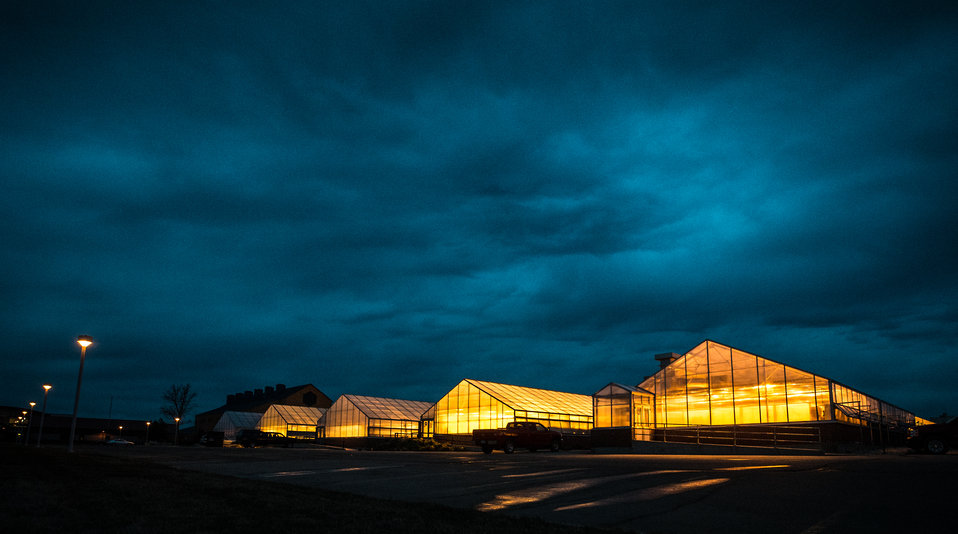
U.S. Department of Agriculture research facility at North Dakota State University, in Fargo, N.D. on Monday, April 29, 2013.